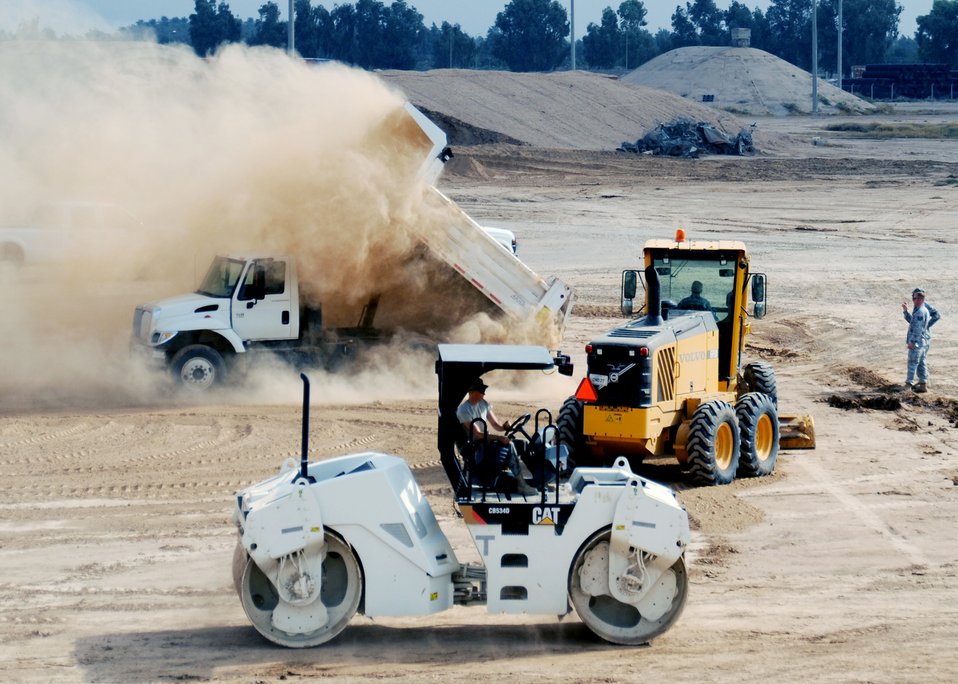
Airmen build up reconstruction yard for drawdown

Airmen prepare the grounds for a new container repair yard Nov. 2, 2009, at Joint Base Balad, Iraq. By using containers repaired here instead of purchasing new ones, the projected savings total more than $100 million as military assets withdraw from Iraq. of the 732nd Expeditionary Civil Engineer Squadron